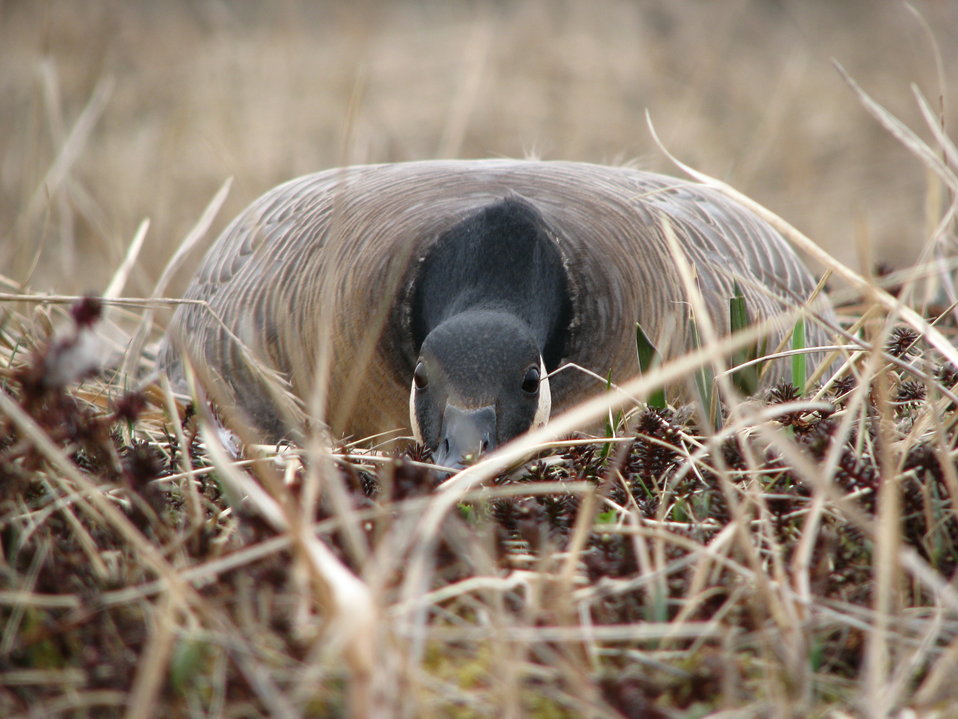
Incubating cackling goose

Yukon Delta NWR
This female cackling goose was sitting very tightly too her nest.